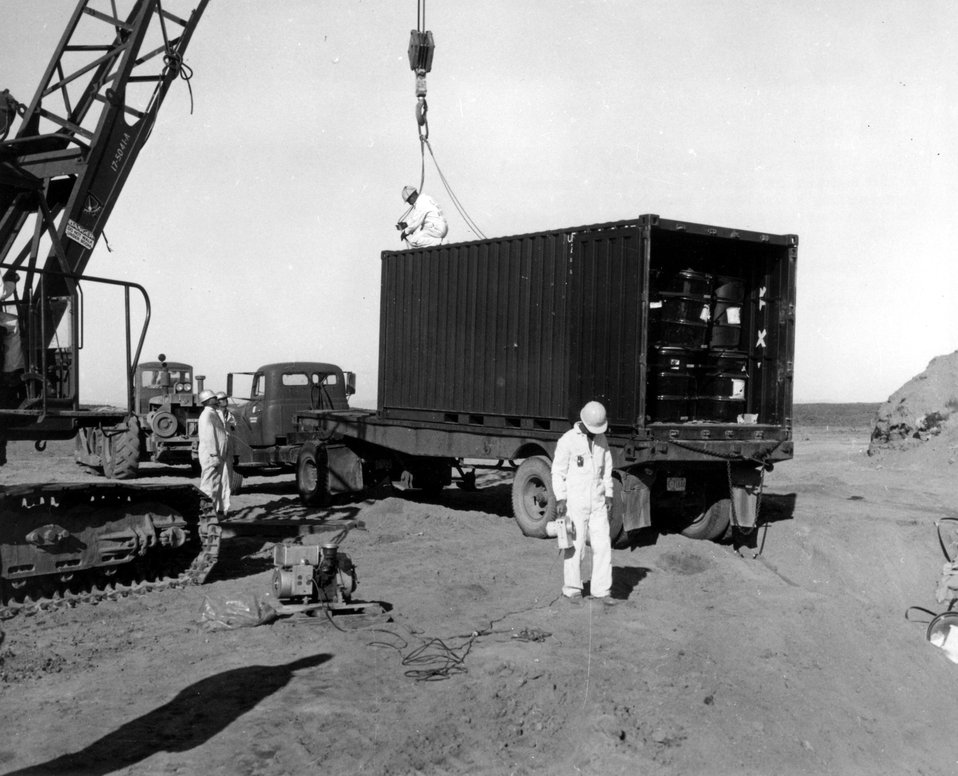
WASTE CONTAINER: Steel box containing barrels of low level solid wastes. Circa 1974.